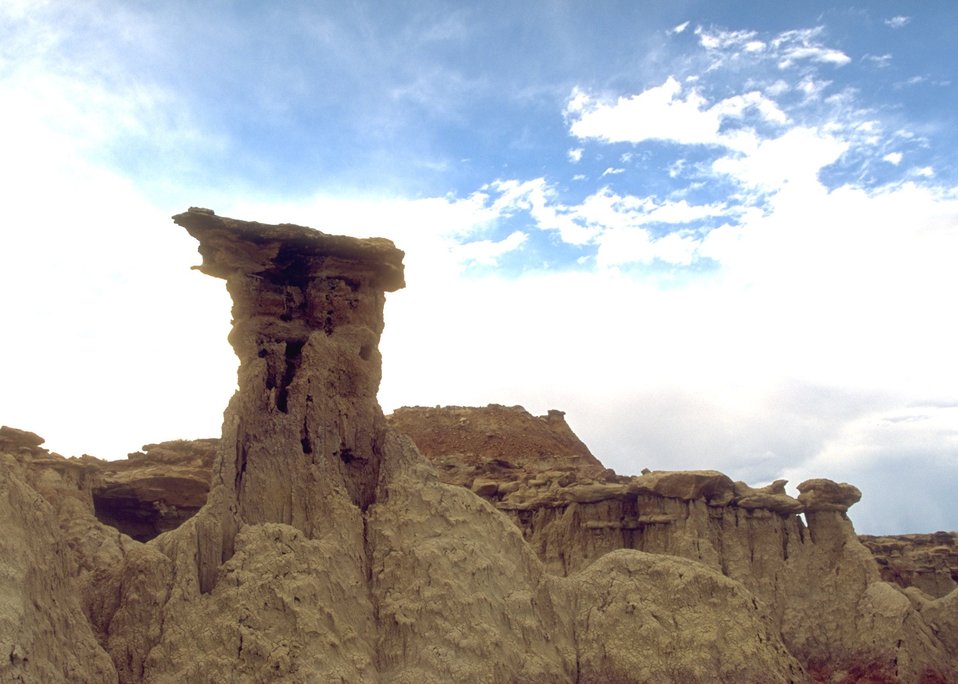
Gooseberry Interpretive Area, Worland Field Office.